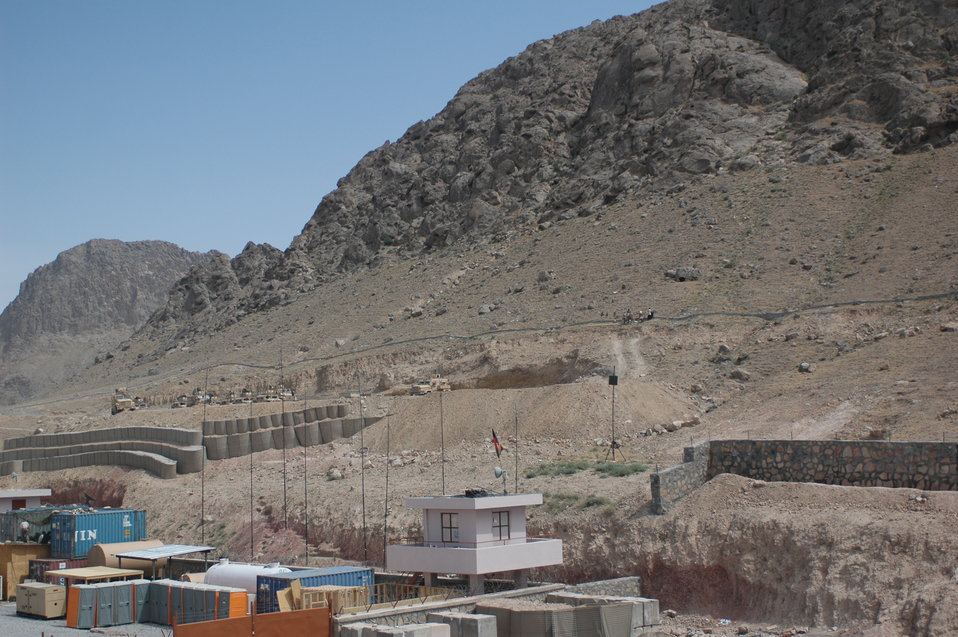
Dr Shah Visits Kandahar April 9, 2010